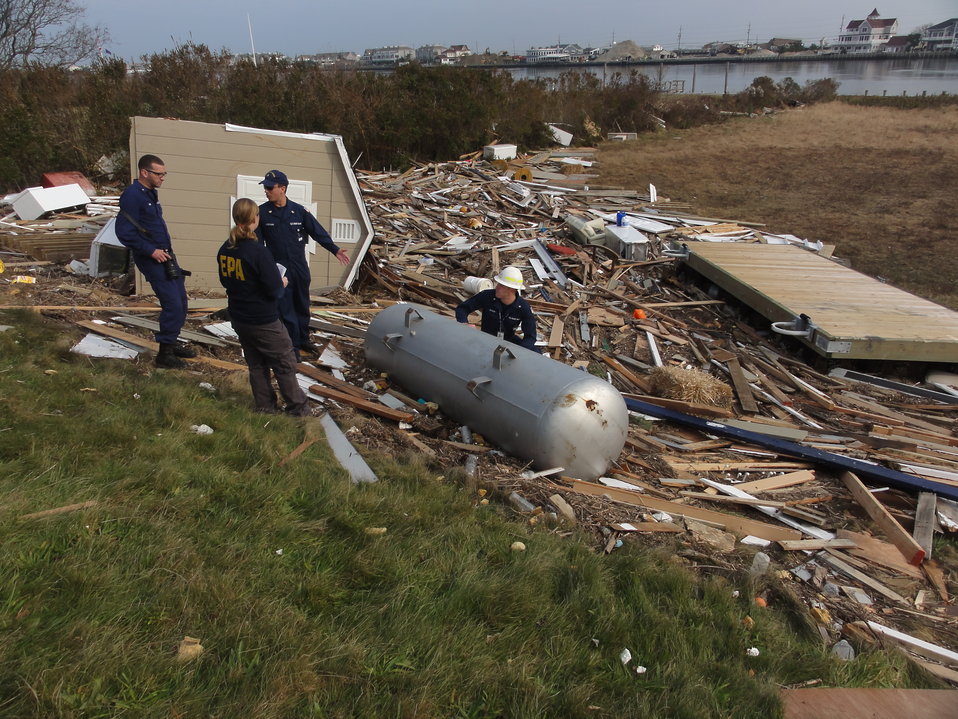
November 10, 2012 EPA and Coast Guard Assess Sandy Damage

While assessing a private property in Rumson, NJ, EPA and the Coast Guard found an overturned propane tank in the debris.